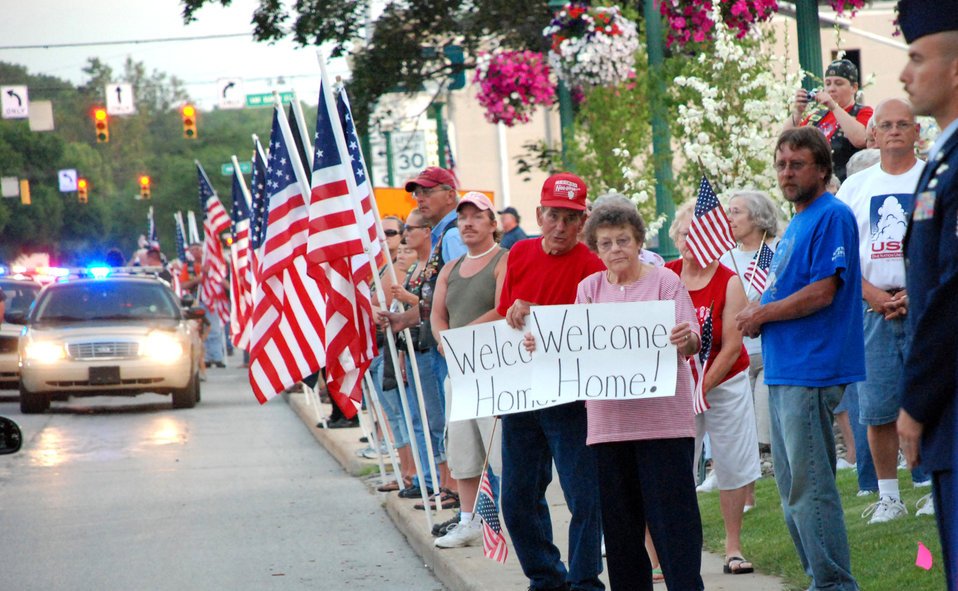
Tech Sgt Roy Prater

Community members line the streets to pay tribute to Air Force Tech. Sgt. Roy DeWitt Prater June 17, 2010, in Columbia City, Ind. Sergeant Prater's helicopter was shot down in 1972. He was missing in action until Joint POW/MIA Accounting Command officials recovered and later positively identified his remains.